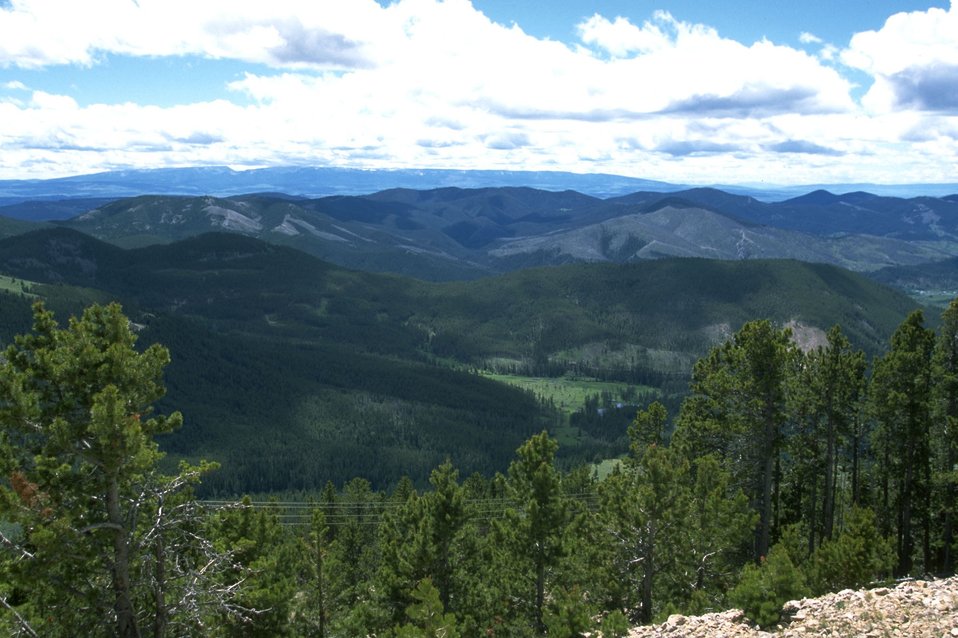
Scenic view of a tree-lined valley in the Judith Mountains